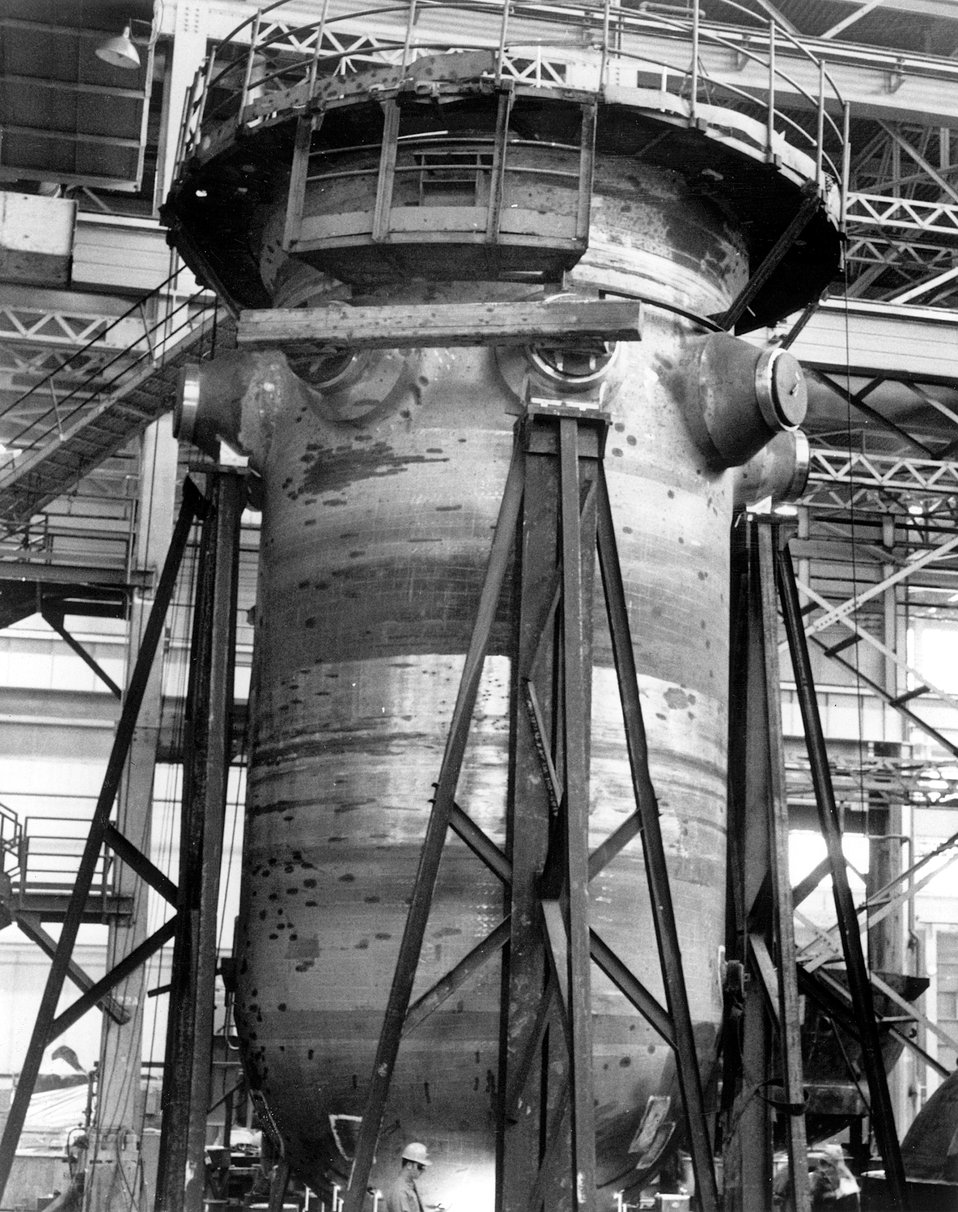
The reactor vessel for Pacific Gas & Electric Company's Unit 1 at Diablo Canyon under construction at Combustion Engineering Company's plant in Chattanooga, Tennessee. Circa 1970.